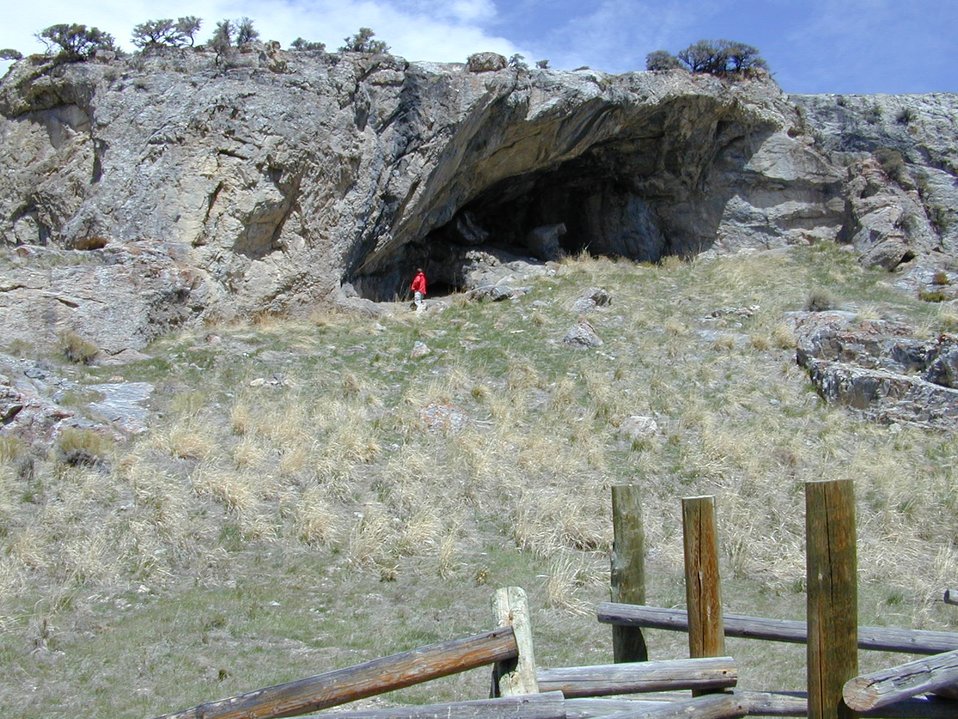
Jaguar Cave Birch Creek Valley Salmon Field Office Upper Columbia-Salmon Clearwater District